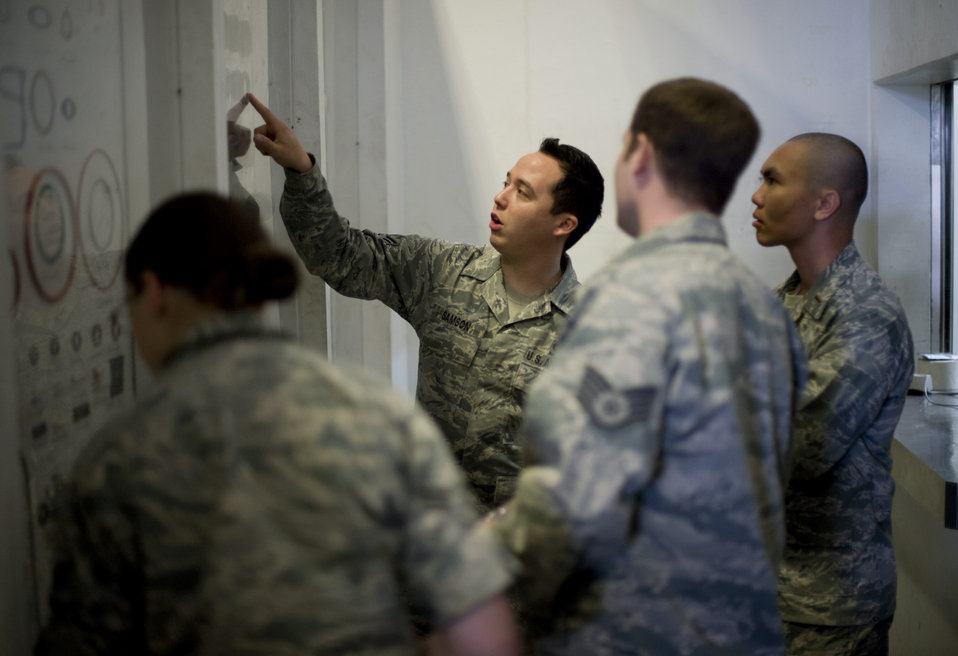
Misawa maintenance Airmen benefit from AFSO21 review

Senior Airman Kennith Samson gives an overview of his flight parts board to an Air Force Smart Operations for the 21st Century team May 18, 2010, at Misawa Air Base, Japan. Airman Samson had been through the AFSO21 process with the aerospace ground equipment flight, and helped the team envision new ways to improve trailer maintenance at the munitions flight. Airman Samson is a 35th Maintenance Squadron aerospace ground equipment flight AGE mechanic.